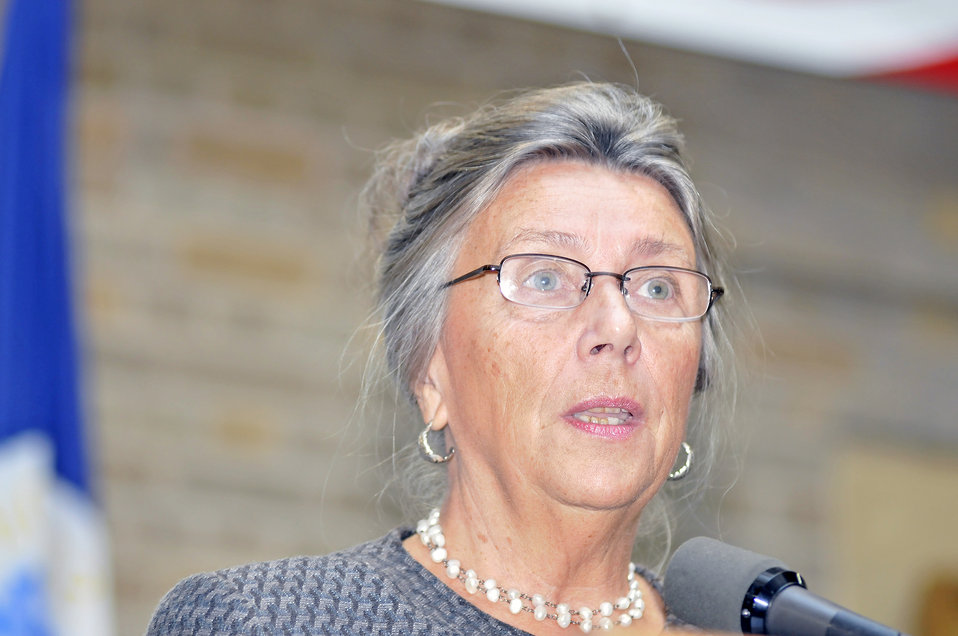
Lynn Brantley, CEO, Capital Area Food Bank, makes remarks at the opening ceremonies for the 2010 Combined Federal Campaign held on the Patio of the U.S. Department of Agriculture in Washington, DC, on Tuesday, October 12, 2010. USDA Photo 10di1521-0046 by Bob Nichols.